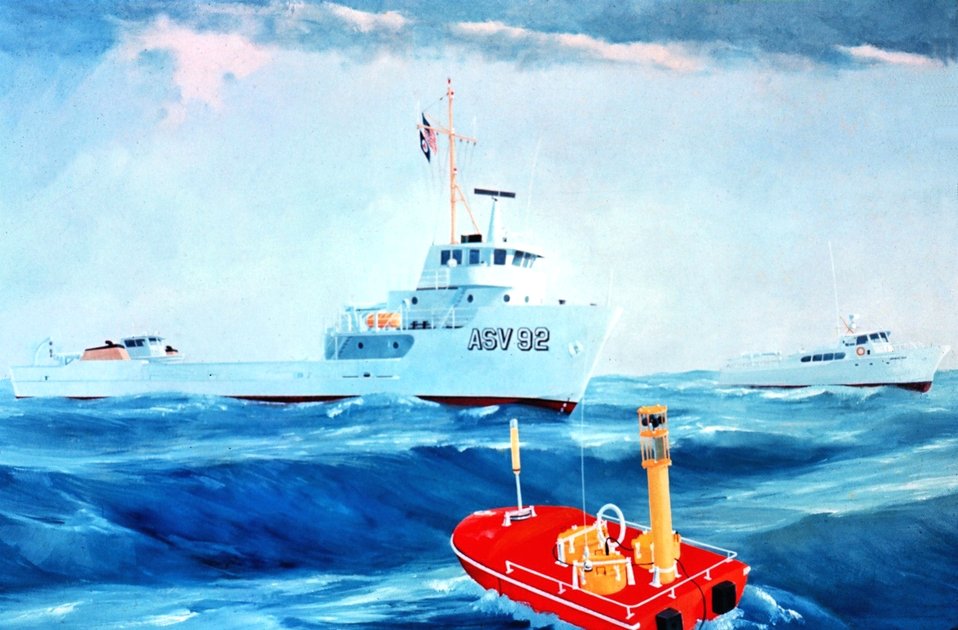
Artist's conception of the NOAA Ship FERREL.